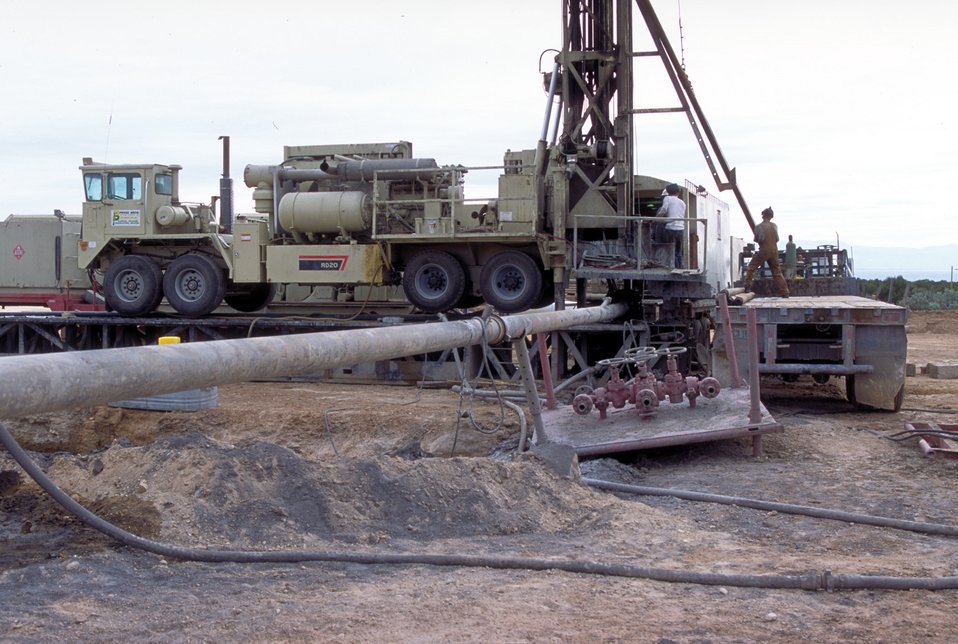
Drilling for coal bed methane near Price, Utah.